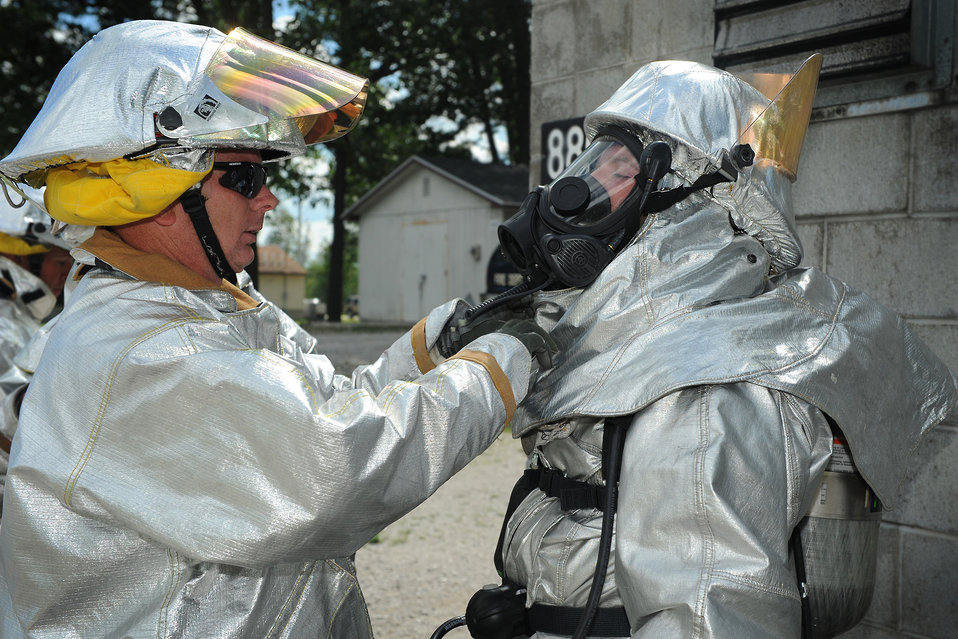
Guard firefighters train for emergencies

Chief Master Sgt. Roy Moore helps a fellow team member don protective gear while participating in a simulated aircraft crash drill in Alpena, Mich., July 21, 2010. The firefighters are with the Michigan Air National Guard's 127th Wing at Selfridge Air National Base.